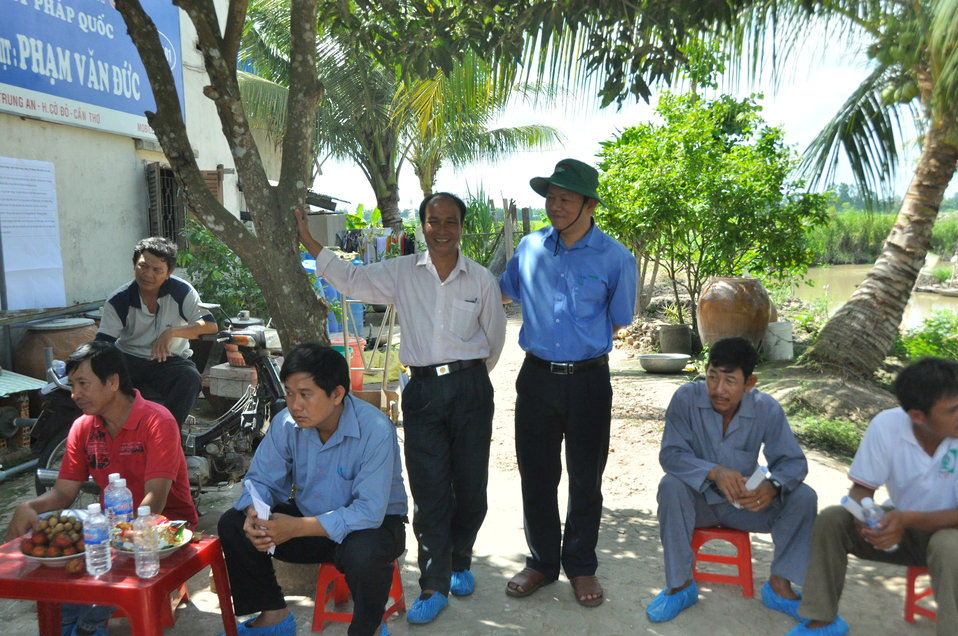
Local duck farmers discuss implementation of biosecurity standards in Can Tho

USAID Vietnam